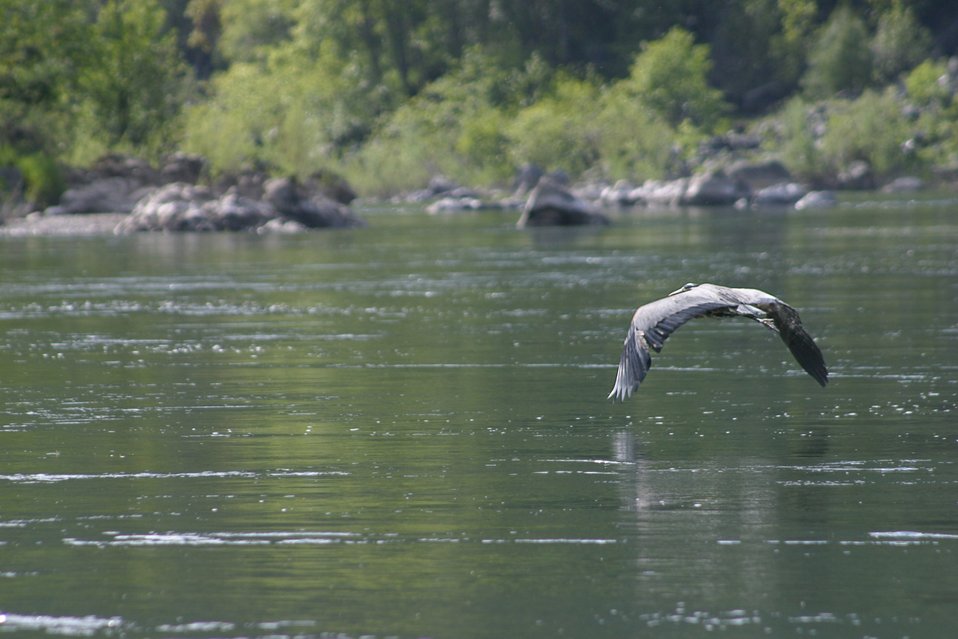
Great Blue Heron on the Wild section of the Rogue River from Grave Creek to Foster Bar. 3100 cfs at Grants Pass and 5300 at Agness.